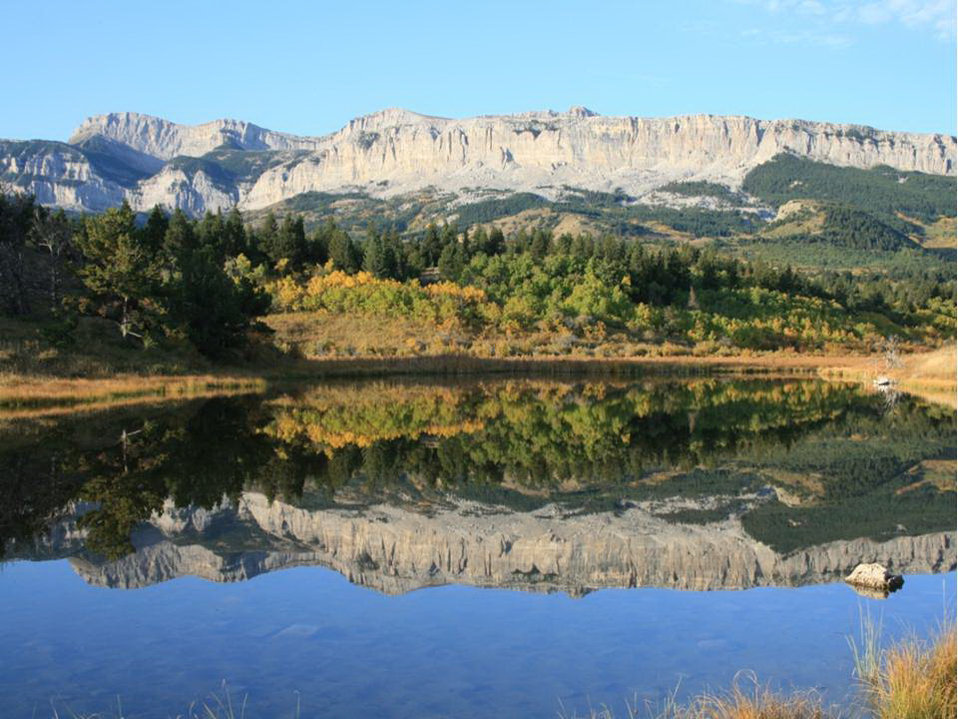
Rocky Mountain Front Focus Area